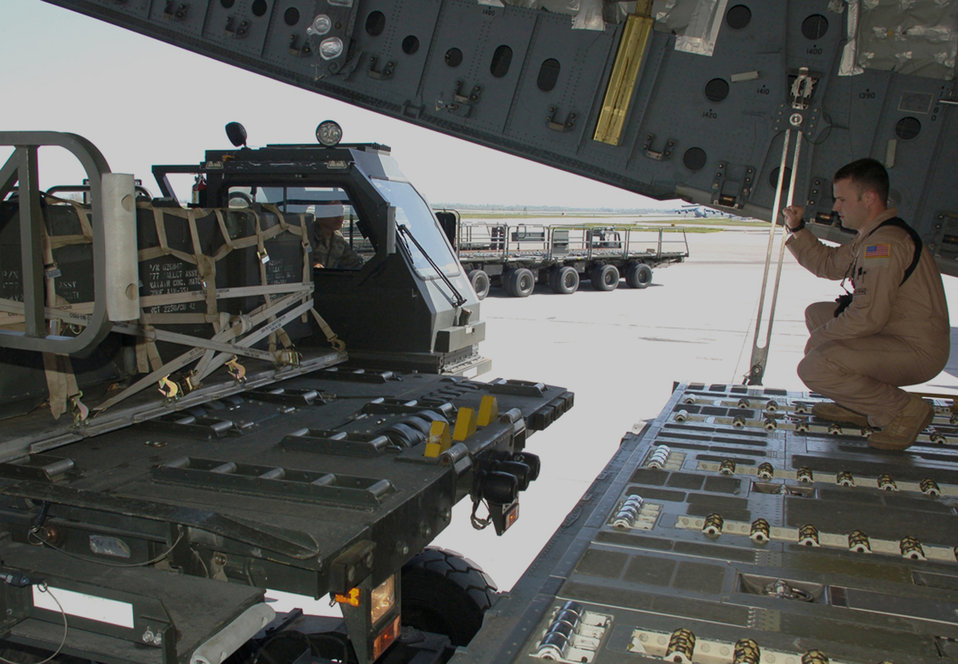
C-17 stage crew ramp up support for OEF

Staff Sgt. Ryan Stark (right) guides a 25K Halvorsen loader into position April 18 as Airman 1st Class Tyler Johnson delivers cargo pallets for upload onto a C-17 Globemaster III going to Afghanistan from Manas Air Base, Kyrgyzstan. Sergeant Stark is a loadmaster deployed with the 535th Airlift Squadron at Hickam Air Force Base, Hawaii. Airman Johnson is assigned 376th ELRS and is deployed from the 60th Aerial Port Squadron at Travis AFB, Calif.